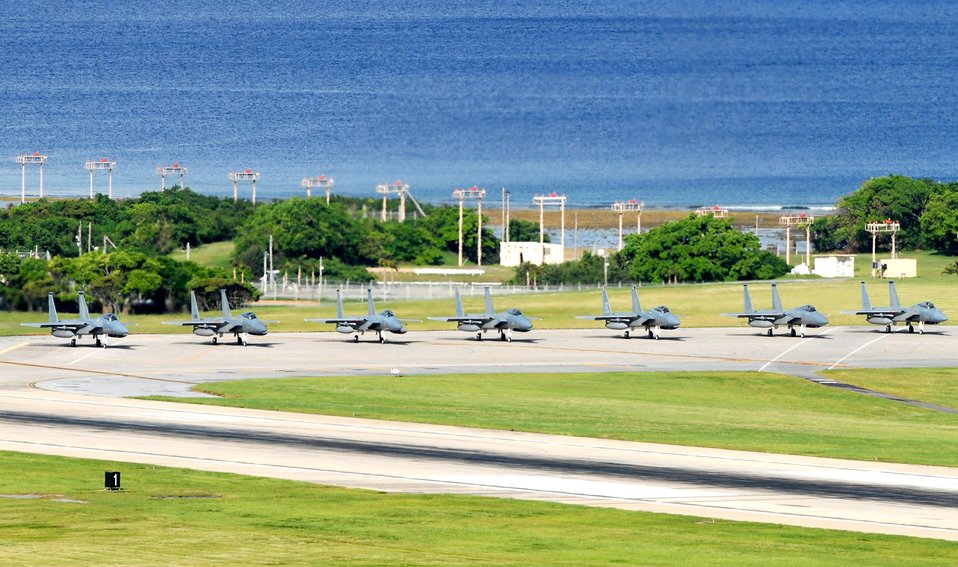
Ready to soar

F-15 Eagles at Kadena Air Base, Japan, are ready to take off Aug. 5 to participate in Exercise Valiant Shield, a weeklong Pacific Command joint exercise. The aircraft and pilots are with the 18th Wing.